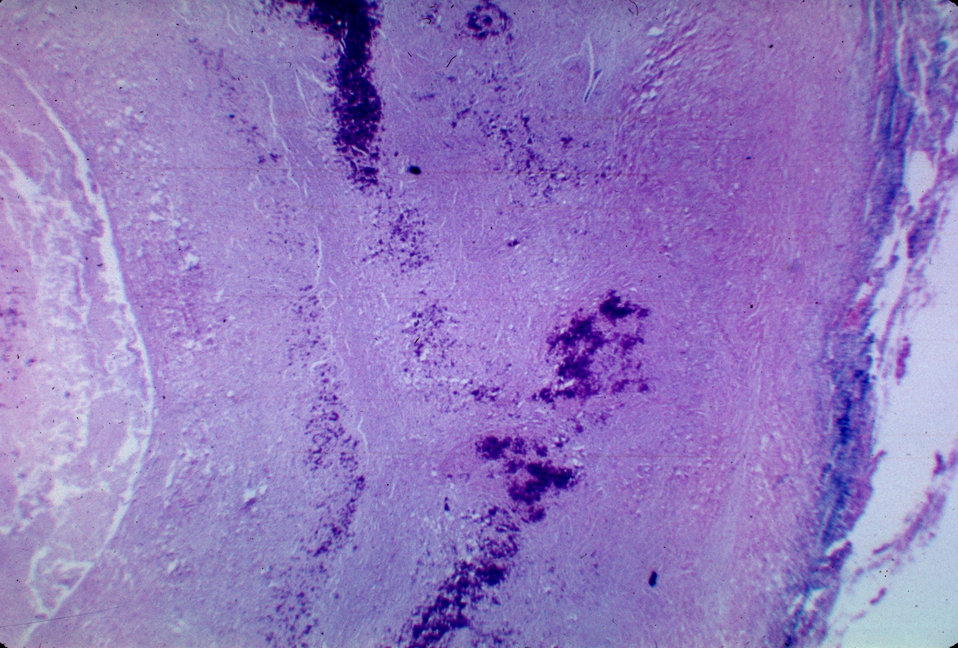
This partially calcified fibrocaseous nodule depicts the histopathologic changes associated with Histoplasmosis of the lung.